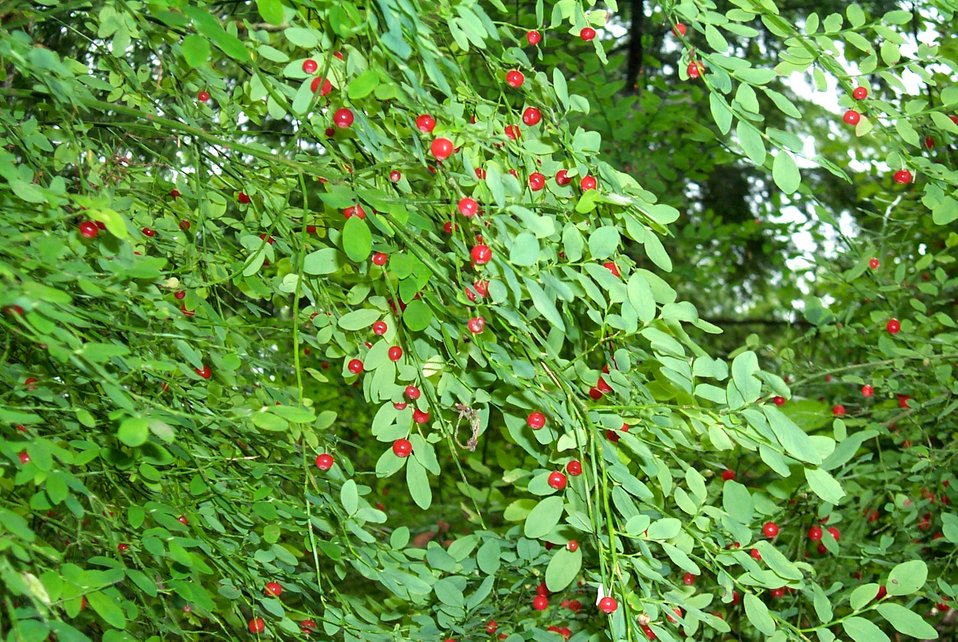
Red berries and green leaves.